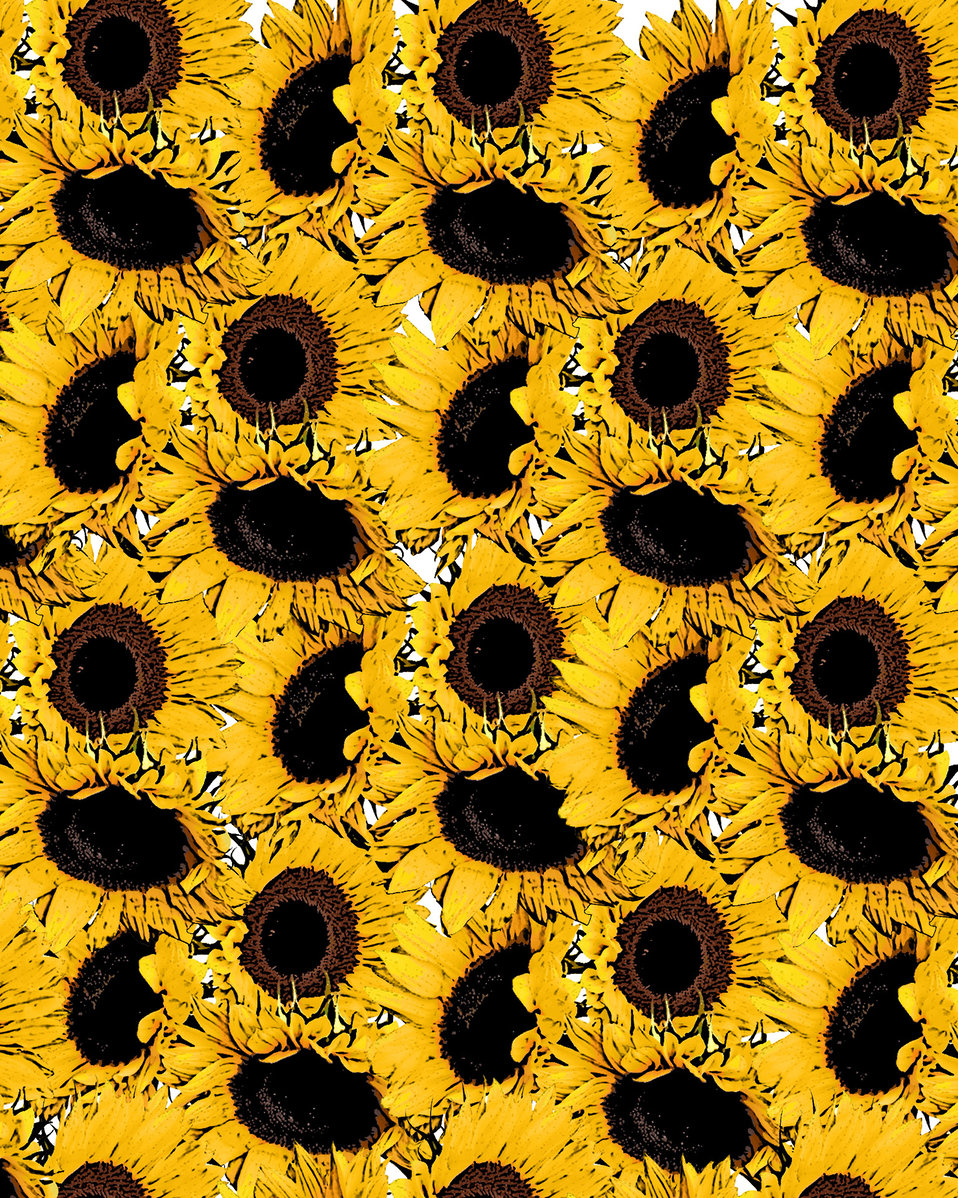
Yellow sunflower background.